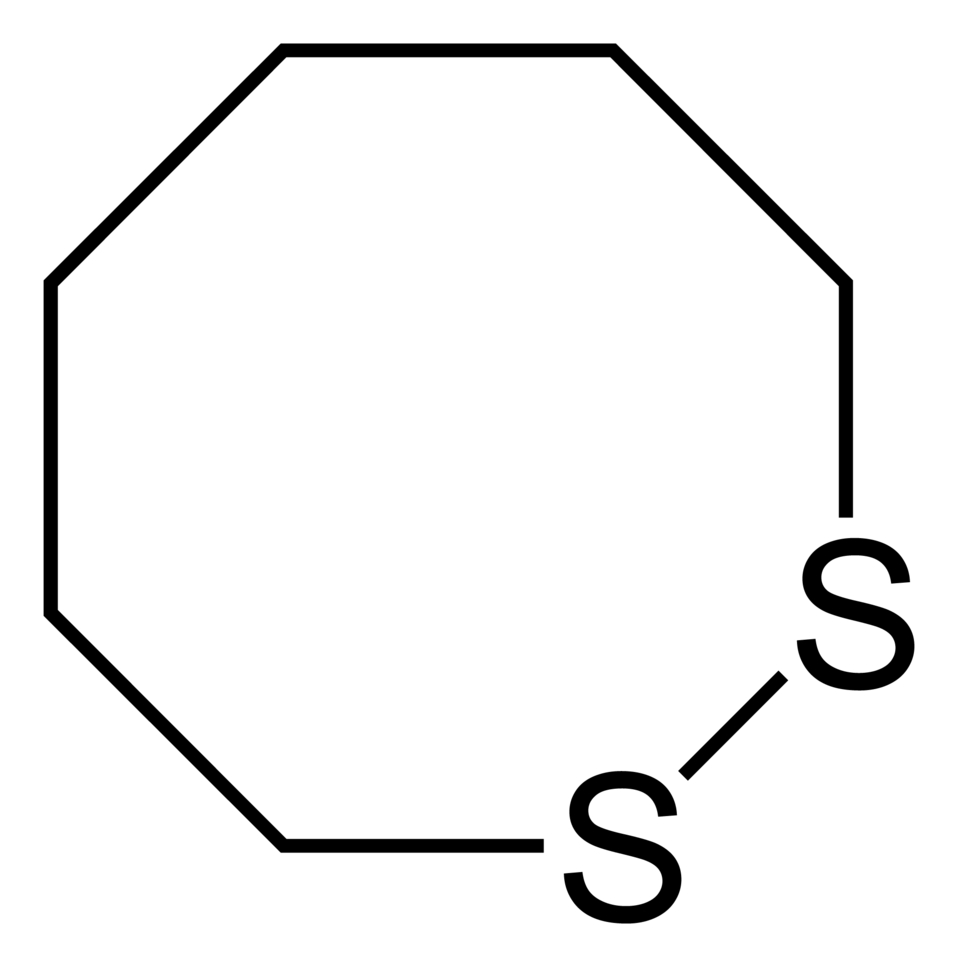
Skeletal formula of the 1,2-dithiocane molecule, C6H12S2.